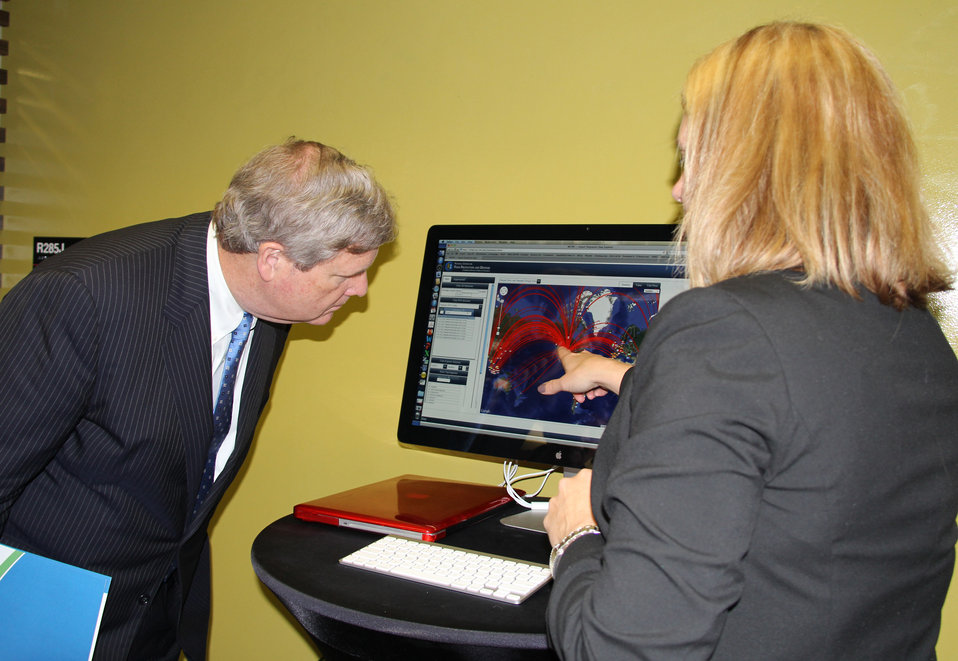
Agriculture Secretary Tom Vilsack receives a briefing on Economic Motivated Adulteration of Food at the National Center for Food Protection and Defense, University of Minnesota, St. Paul, MN on Apr. 18, 2014.